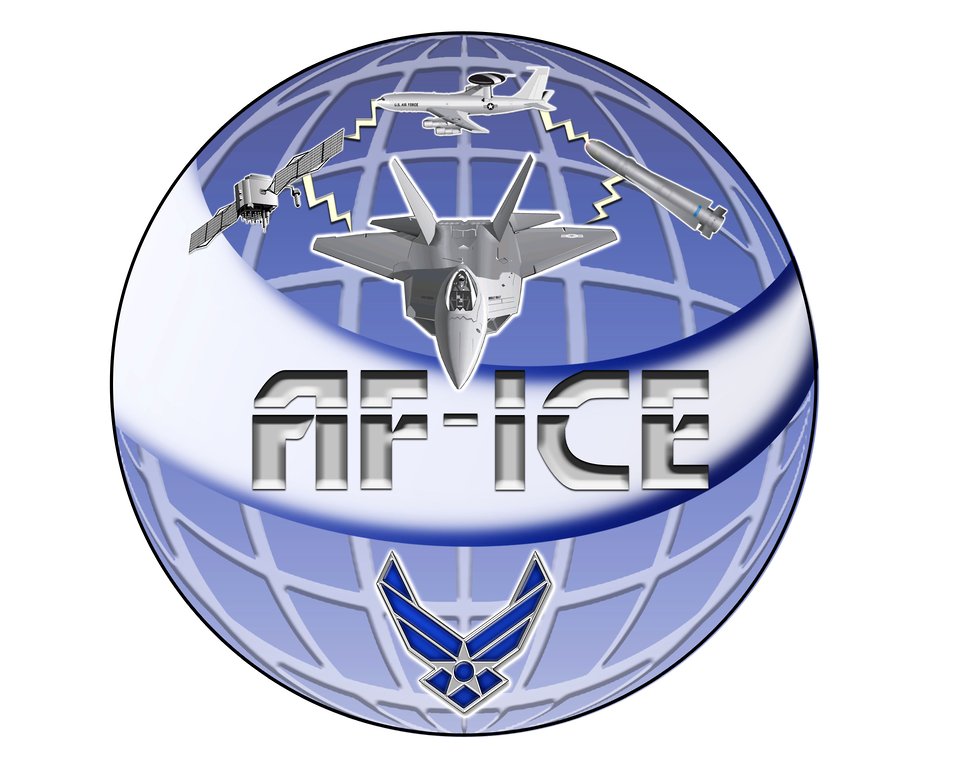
AFMC leads ICE Breaker

Air Force Integrated Collaborative Environment